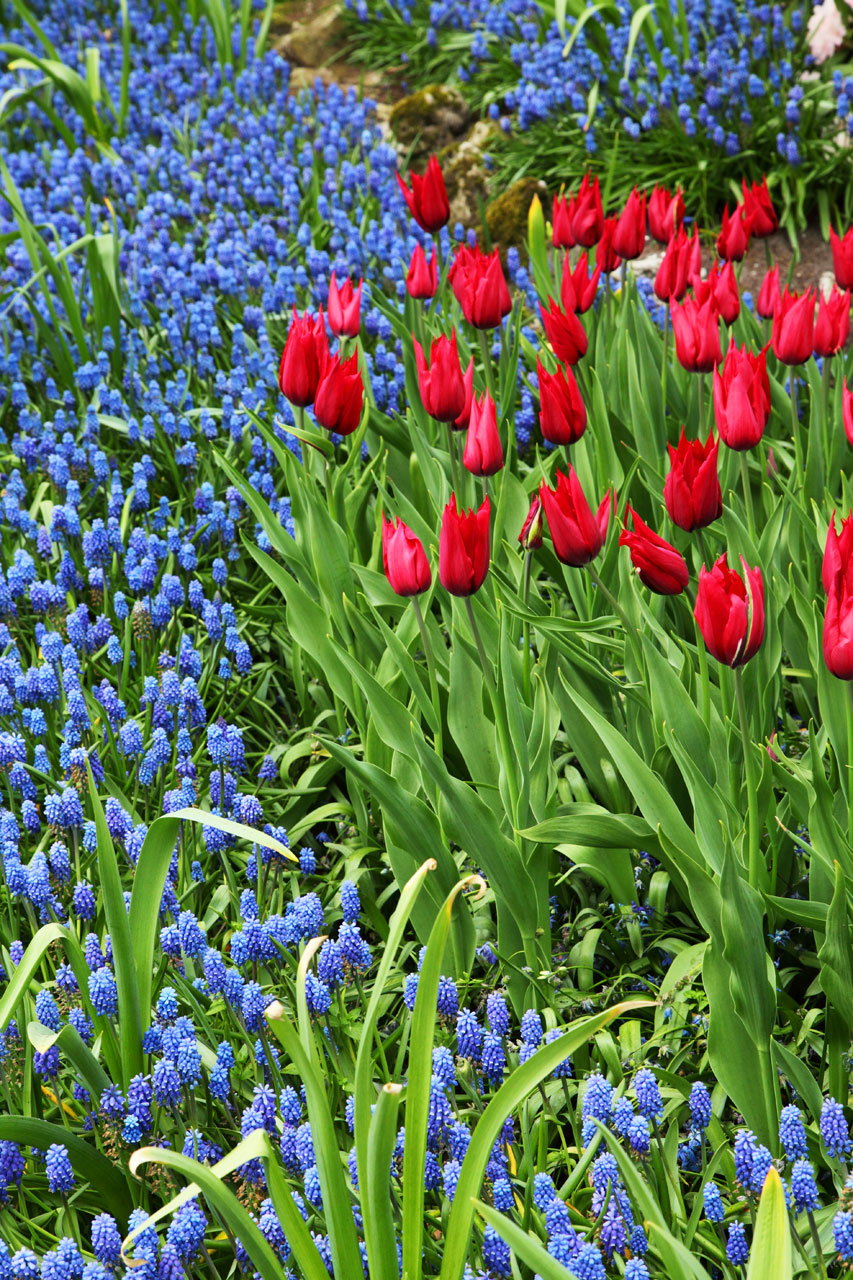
Tulips and grape hyacinths

Red tulips and grape hyacinths in keukenhof gardens.